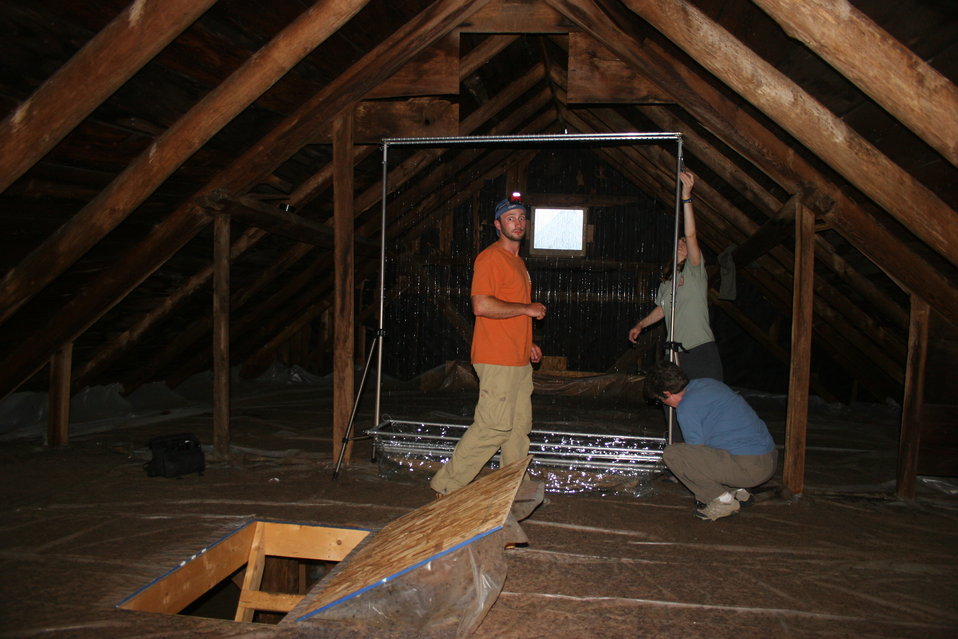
Biologists setting harp trap

Biologists set up harp traps to capture bats as they leave the roost to feed for the night.